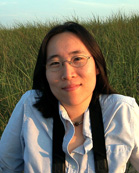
Joyce Yang is a Technology Manager at DOE’s Bioenergy Technologies Office. In this role, she is focused on program planning and project management efforts on biochemical and catalytic conversion technologies to make renewable fuels and chemicals from biomass. Previously, Joyce led the algae to hydrocarbon fuel initiative. Her accomplishments include publishing the DOE National Algal Biofuels Technology Roadmap, serving on the External Advisory Board of the National Alliance for Advanced Biofuels and Bioproducts consortium, and chairing the Interagency Algae Working Group under the Biomass R&D Board. She has written DOE blog entries and concept papers on biobased chemicals and biomanufacturing. Joyce was recently recognized as one of the Top 100 People in Bioenergy by the Biofuels Digest in 2012. Joyce’s efforts on behalf of DOE have been recognized internationally. She is a contributing author for the IPCC Special Report on Renewable Energy Sources and Climate Change Mitigation, and served as the US Advisor for the Organizing Committee of the 1st Asia-Oceania Algae Innovation Summit.

Read her full story at energy.gov/diversity/articles/women-energy-joyce-yang